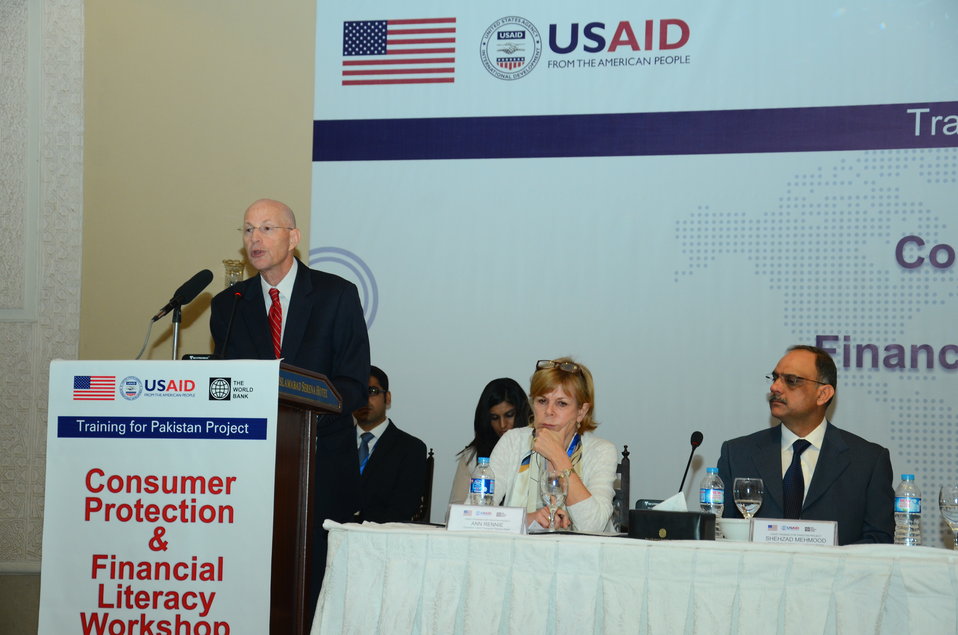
Consumer Protection and Financial Literacy workshop 03

USAID supported study to build public confidence in financial institutions; encourage savings and long-term investments